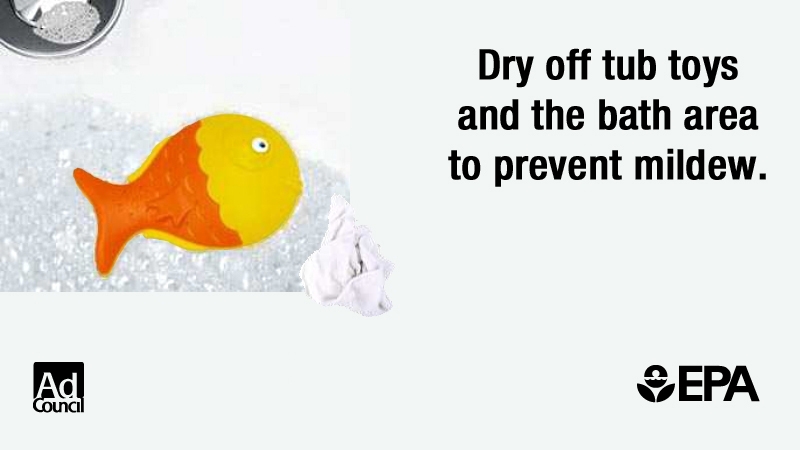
Small Steps Make a Difference

Moisture leads to mold. Take simple steps to avoid mold growth and other asthma triggers in your home. Triggers are things that can cause asthma symptoms, an episode or attack or make asthma worse. Be sure to work with a doctor to identify triggers and develop a treatment plan that includes ways to reduce exposures to your asthma triggers.